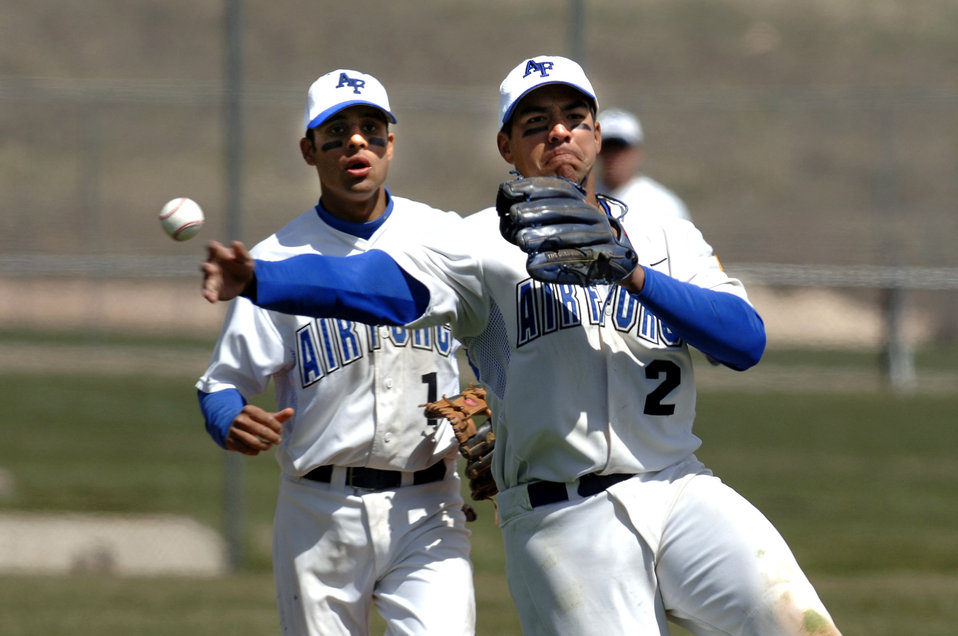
New Mexico sweeps Falcons

Senior second baseman Geno Salazar throws to first during a double play in game three of the 3-game series against the New Mexico Lobos. New Mexico swept the 3-game series from the Air Force Falcons.